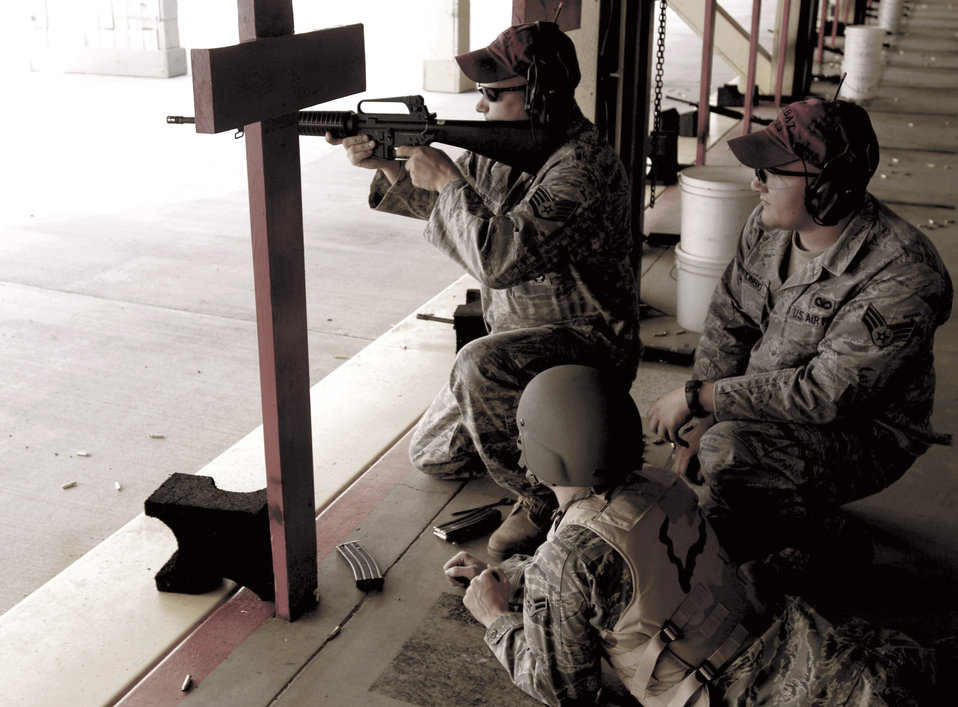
92nd SFS CATM

Staff Sgt. Alan McNew tests sight alignment adjustments on an M16-A2 rifle for Senior Airman Erik Zwolinksi July 8, 2010, at the combat arms training and maintenance shooting range. Sergeant McNew and Airman Zwolinksi 92nd Security Forces combat arms and maintenance instructor,